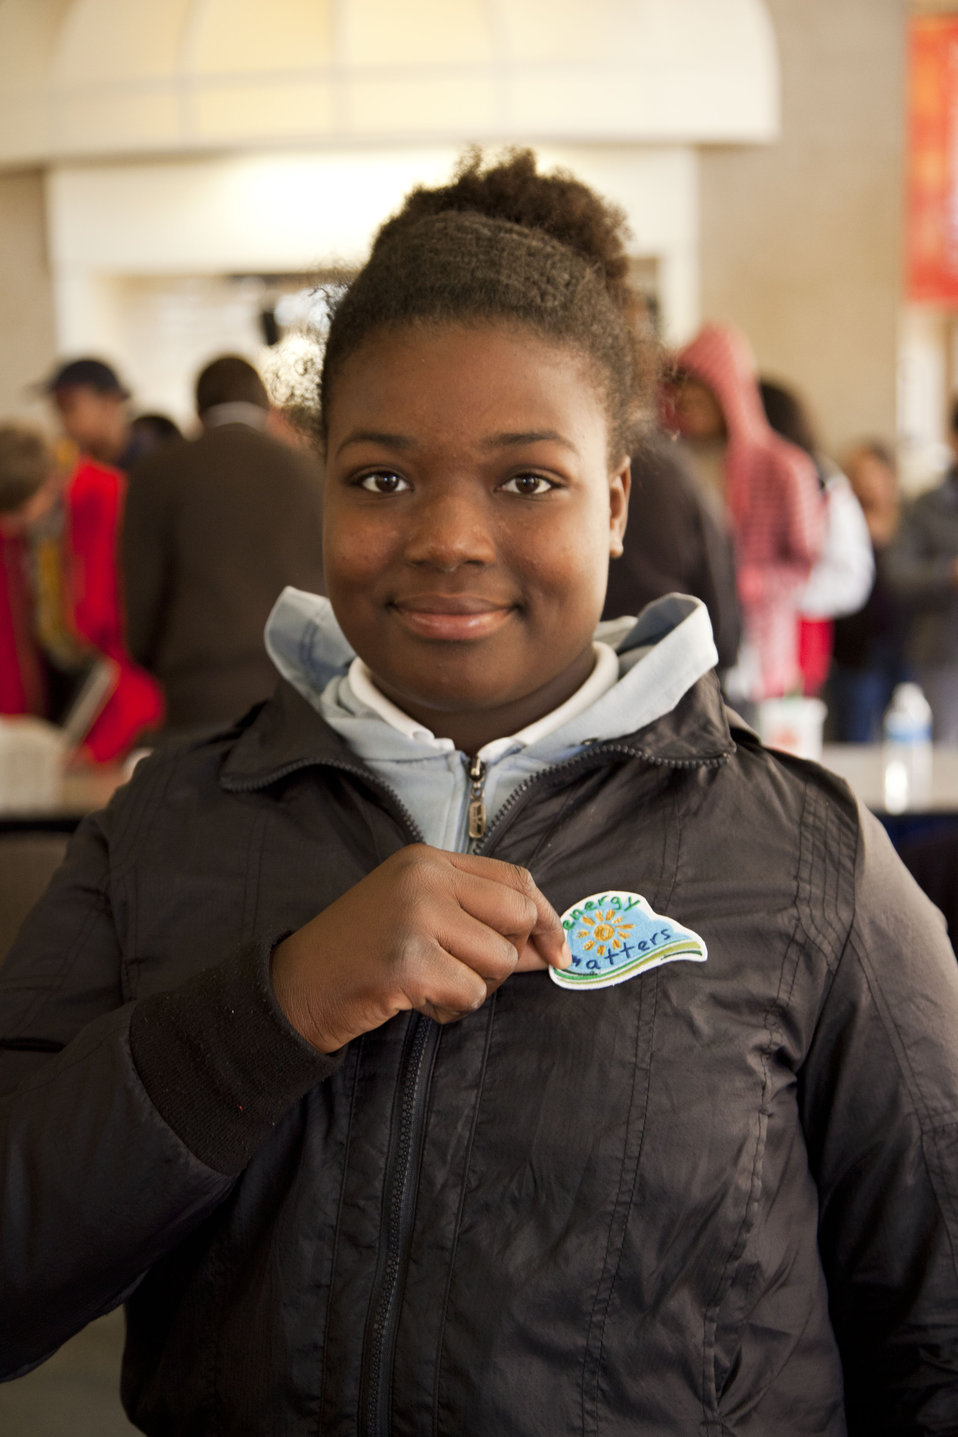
A Girl Scout proudly holds her merit patch after attending the energy class as part of Energy Action Month.